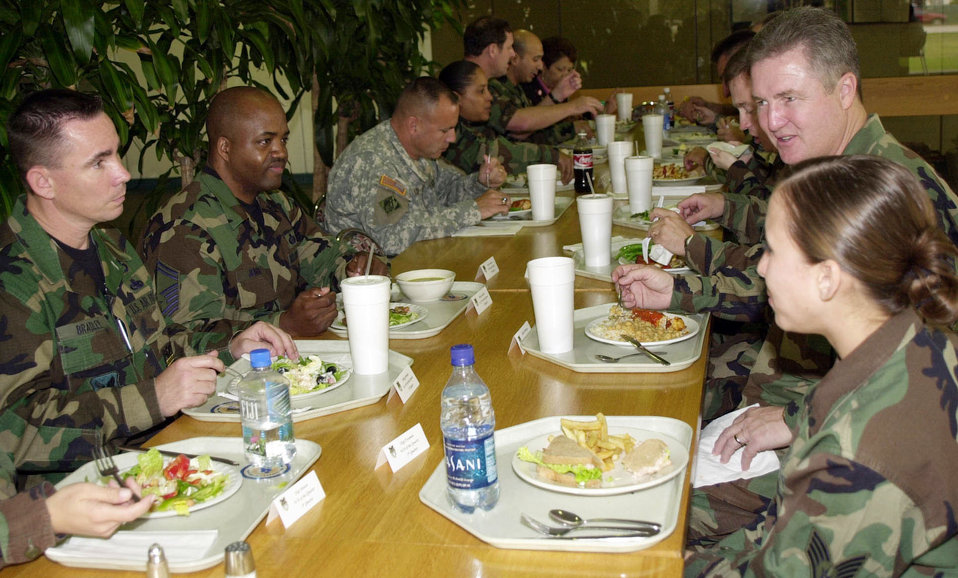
CMSAF visits U.S. Southern Command

MIAMI (AFPN) -- Chief Master Sgt. of the Air Force Gerald R. Murray (top right) talks to Airmen and the U.S. Southern Command sergeant major during lunch while visiting SOUTHCOM headquarters here Jan. 19. Chief Murray made four stops to visit Airmen in the SOUTHCOM area of operations, which included Honduras, Ecuador, Columbia and the Miami area Jan. 16 to 19.